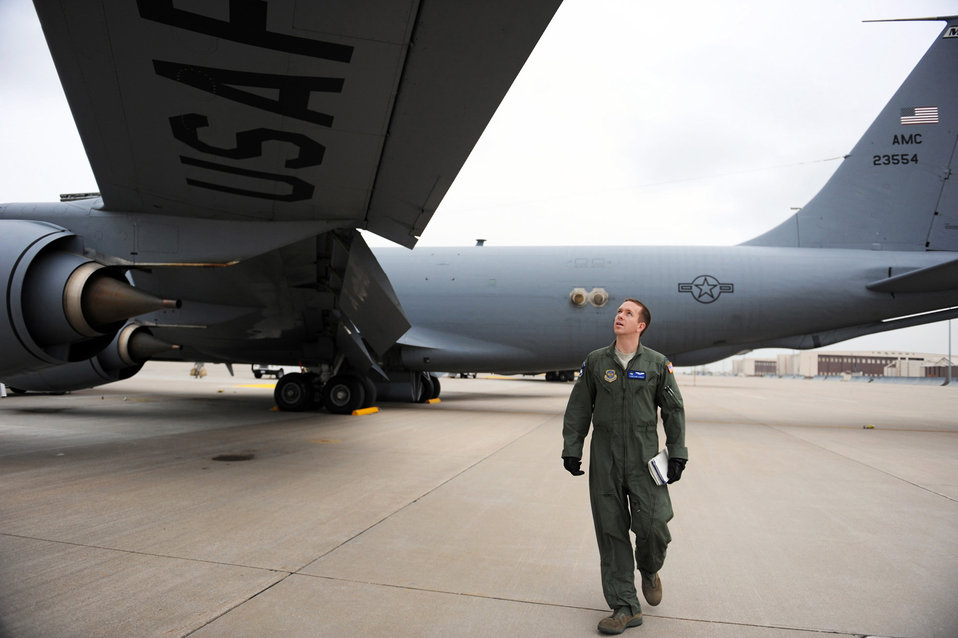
Air Refueling

Capt. Courtland Stanley conducts a preflight check on the historic